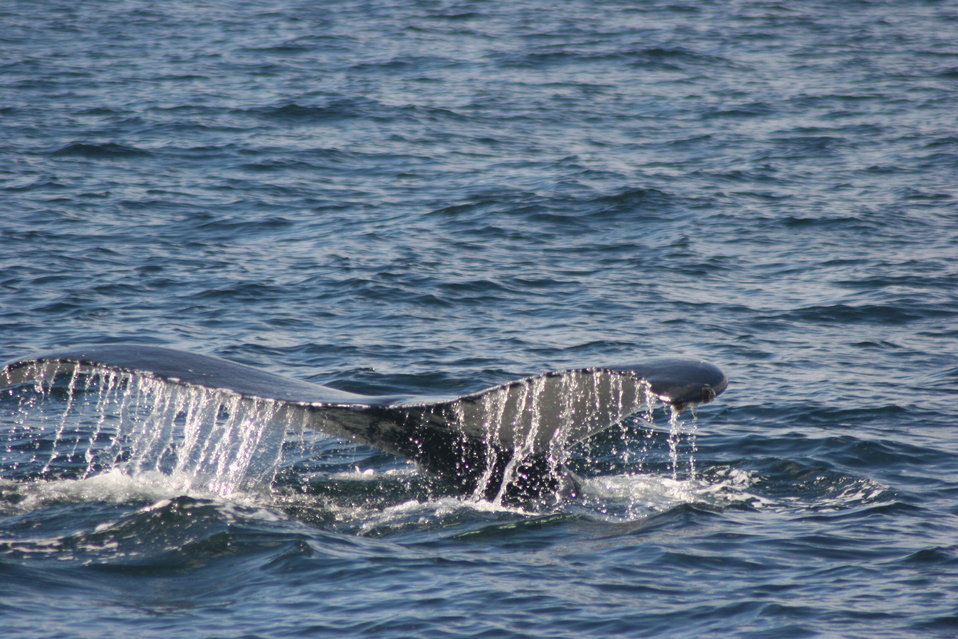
Tail of a Humpback Whale

Photographed off the coast of Gloucester, MA.